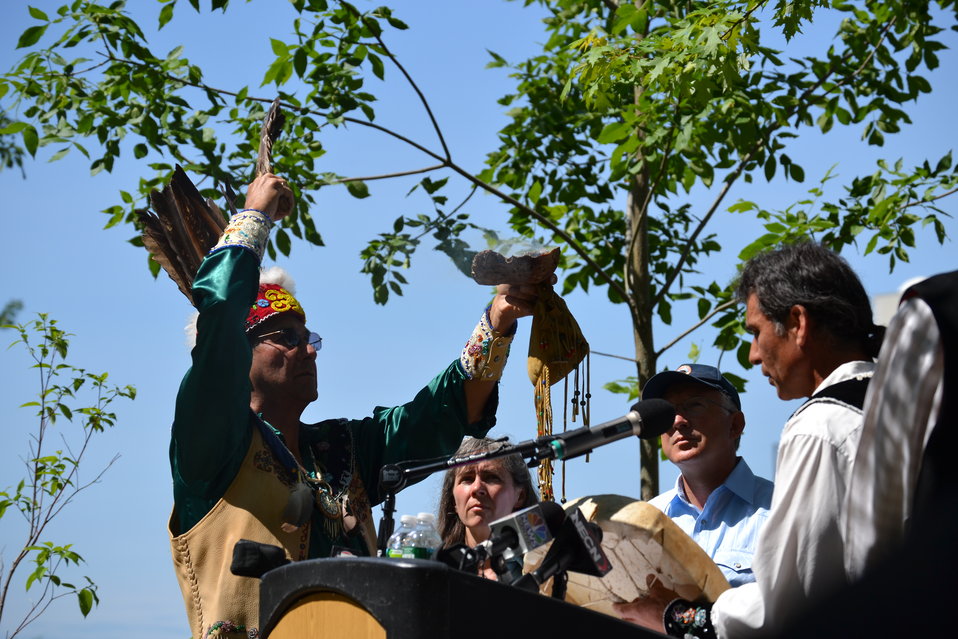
Butch Phillips and Barry Dana of the Penobscot Nation offer a blessing